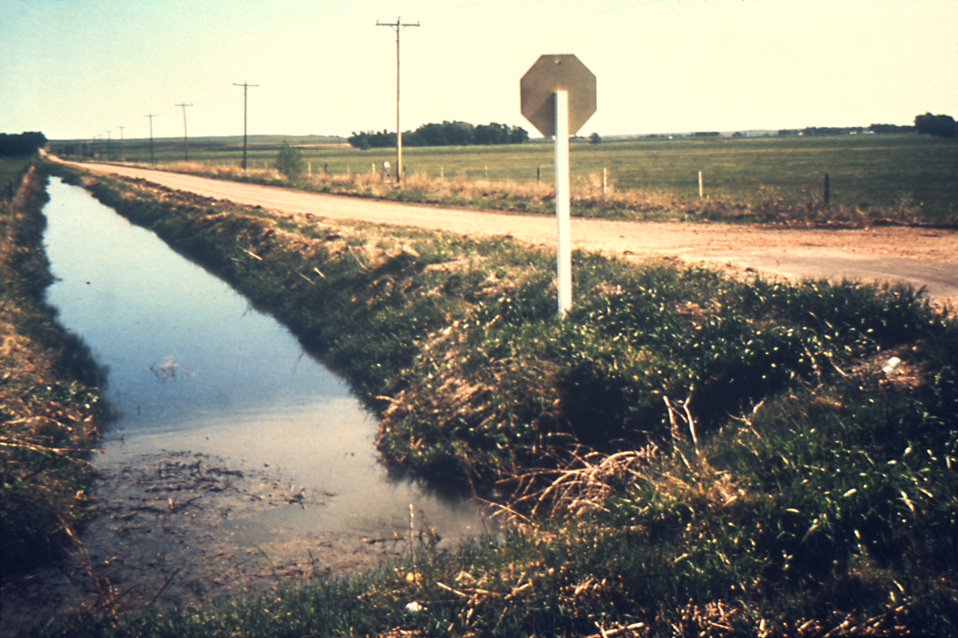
This is an example of a Colorado roadside canal filled with irrigation run-off water from a nearby crop.